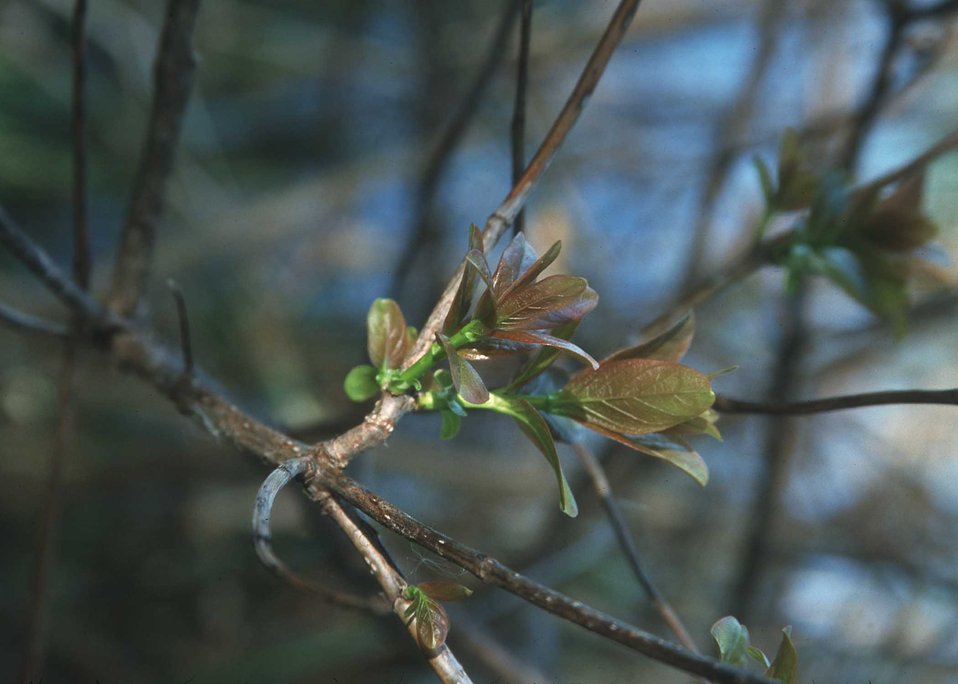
Trees provide wildlife habitat and diversification in an ecosystem.